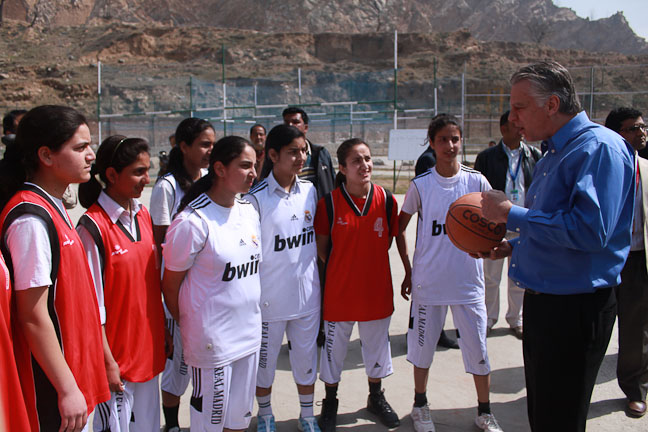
Ambassador Roemer Visits Jammu and Kashmir

U.S. Ambassador to India Timothy J. Roemer visits Jammu and Kashmir, March 17-18, 2011, to engage and listen to the people and connect with the youth of the state.